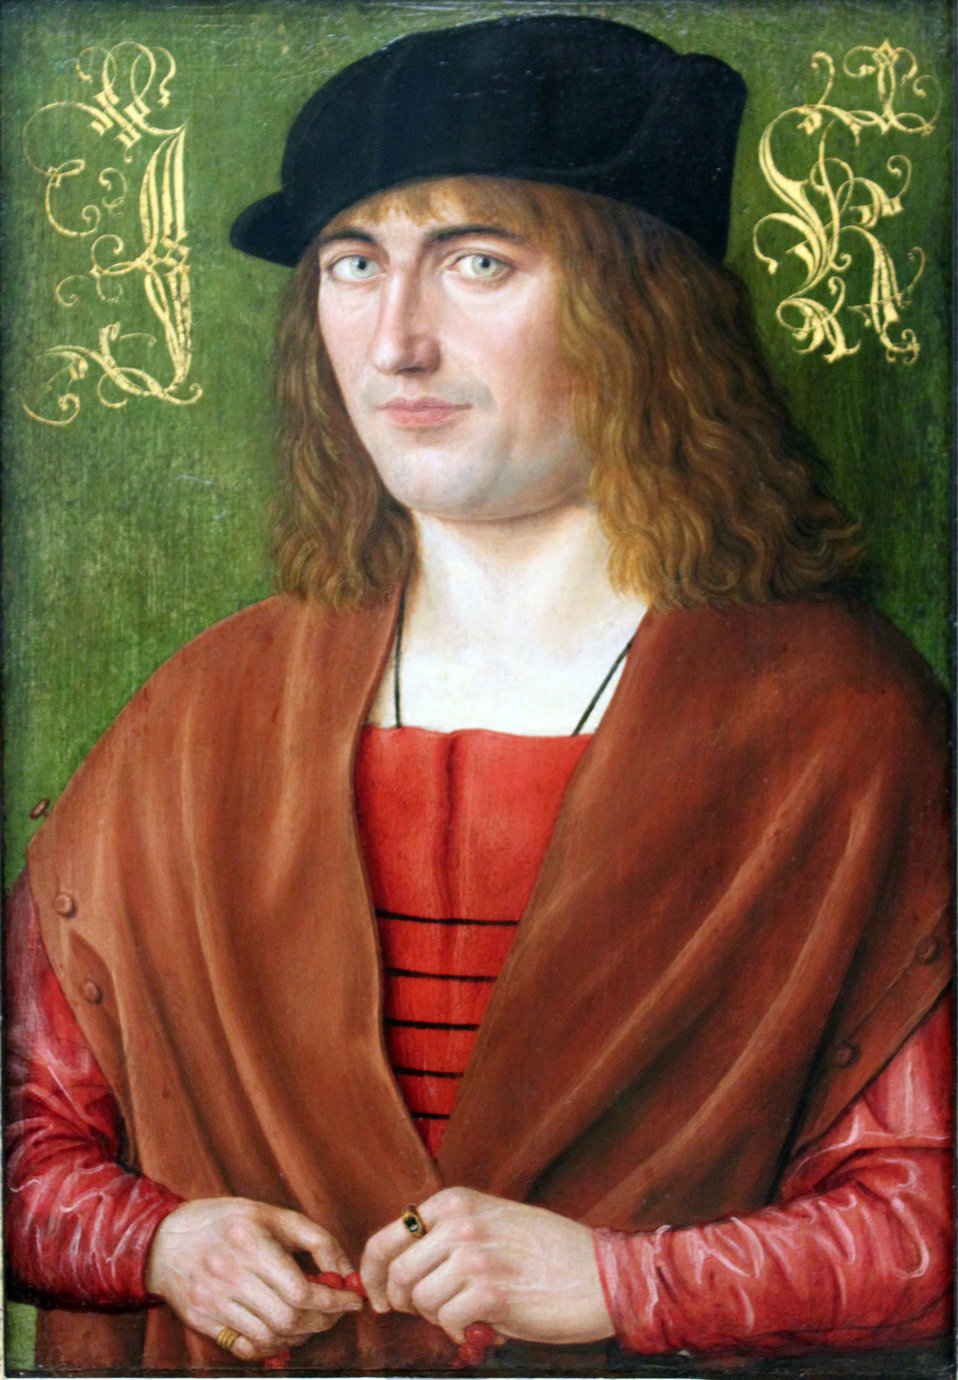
1499 Bildnis des Buergers Joerg Ketzler anagoria